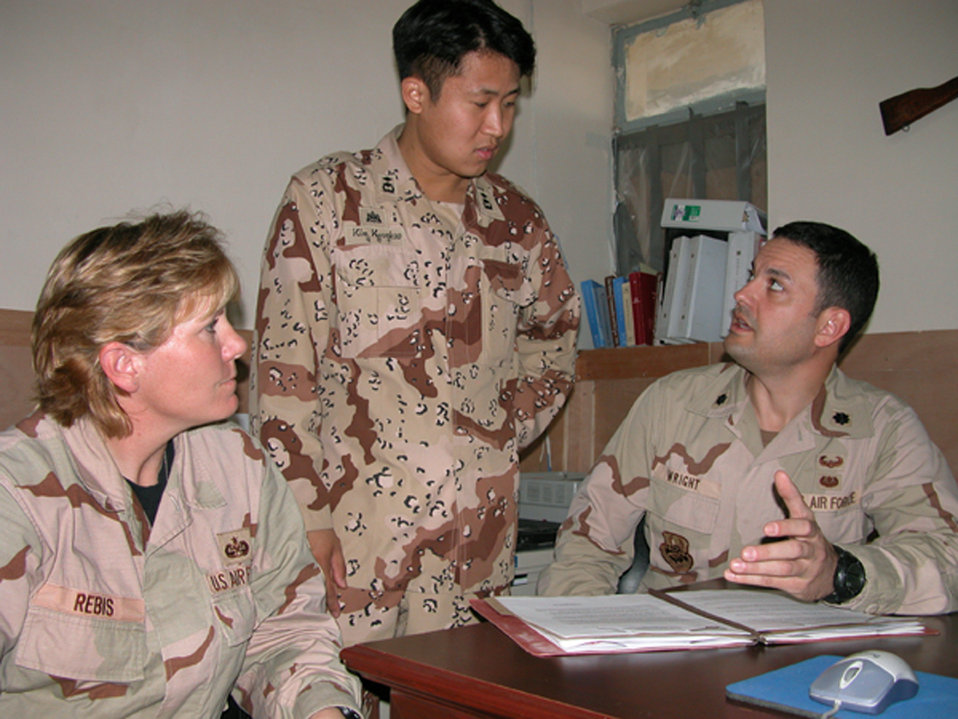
Legal issues

TALLIL AIR BASE, Iraq -- Lt. Col. Brent Wright (right) and Master Sgt. Mary Alice Rebis review a legal claim with 1st lt. Kim Kwankoo, a Korean military lawyer here. Colonel Wright and Sergeant Rebis are assigned to the 332nd Air Expeditionary Wing legal office.